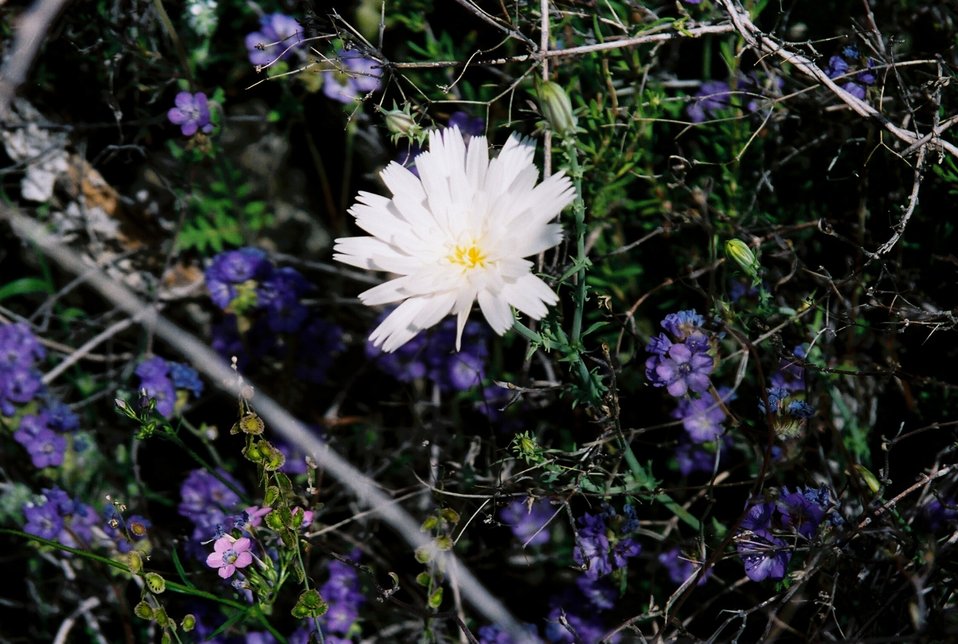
Many different kinds of beautiful wildflowers grow in the Agua Fria National Monument.